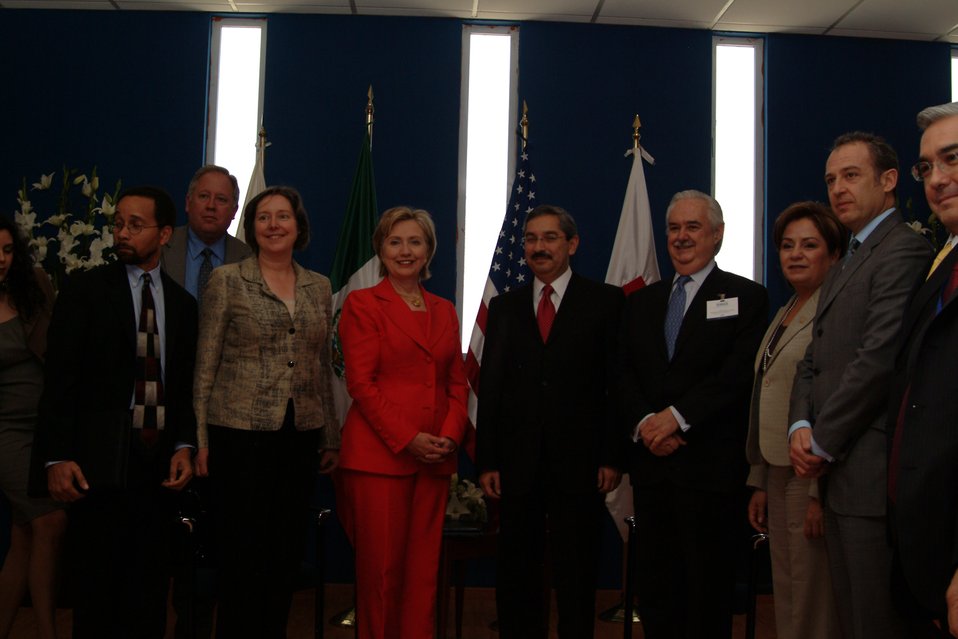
Secretary Clinton at TecMilenio University

U.S. Secretary of State Hillary Rodham Clinton at Tecmilenio University in Monterrey, Mexico March 26, 2009.